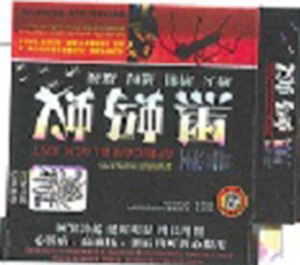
20140501163152678pic1 Page 2